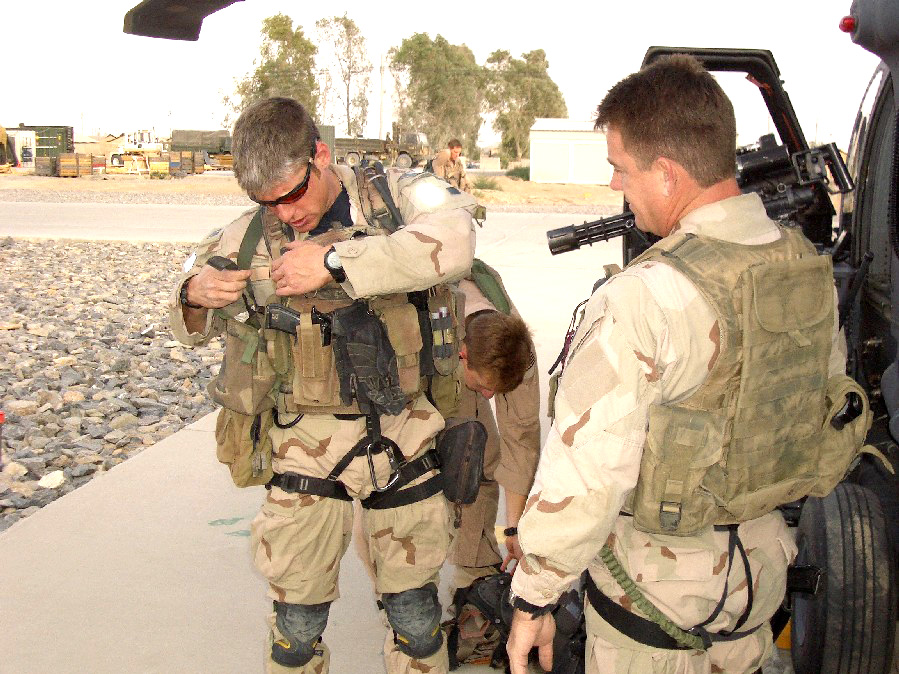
Total force combats explosive devices

KANDAHAR AIRFIELD, Afghanistan -- Senior Airman Chris Piercecchi (left) adjusts his survival vest before a rescue mission as Senior Master Sgt. Jim Sanchez watches. They are pararescuemen with the 451st Air Expeditionary Group here and are deployed from the 305th Rescue Squadron at Davis-Monthan Air Force Base, Ariz.